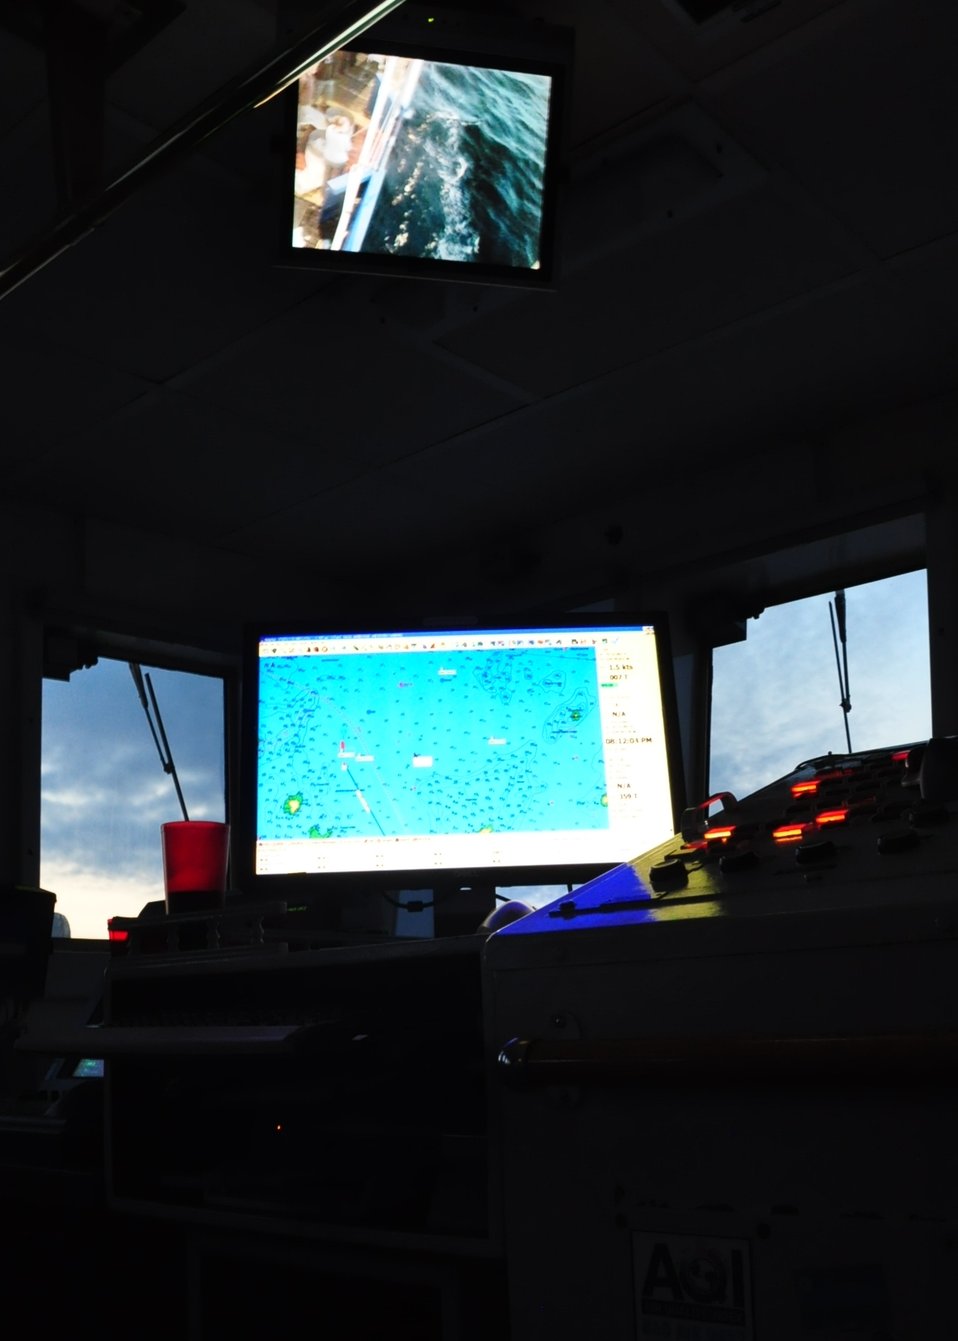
August 5, 2011 Monitors glow as the daylight fades away

As night wears on, the bridge stays dark to keep a close eye on the navigation equipment.